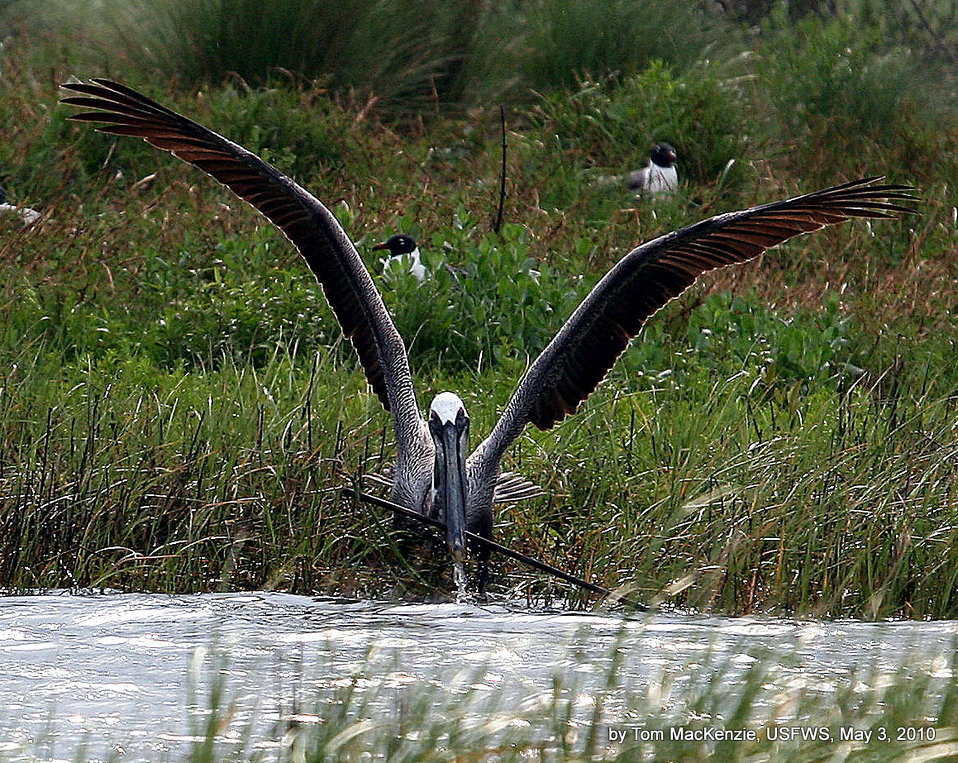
Brown pelican snares a stick for nest building at Breton National Wildlife Refuge.